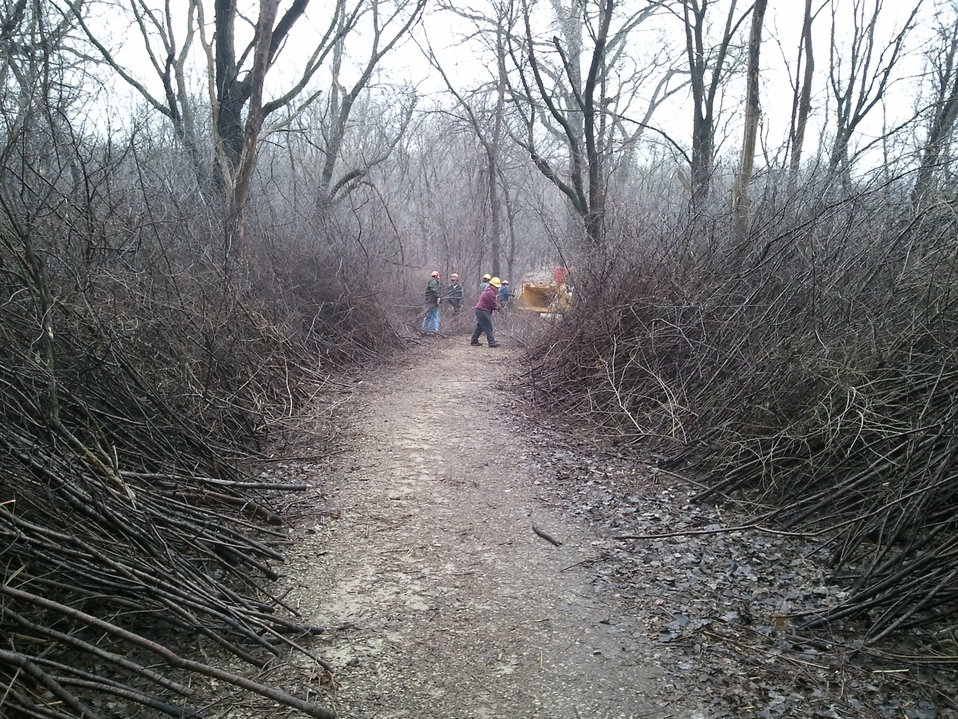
Piling

The crews stacked all their cut wood along the trail-quite a pile!